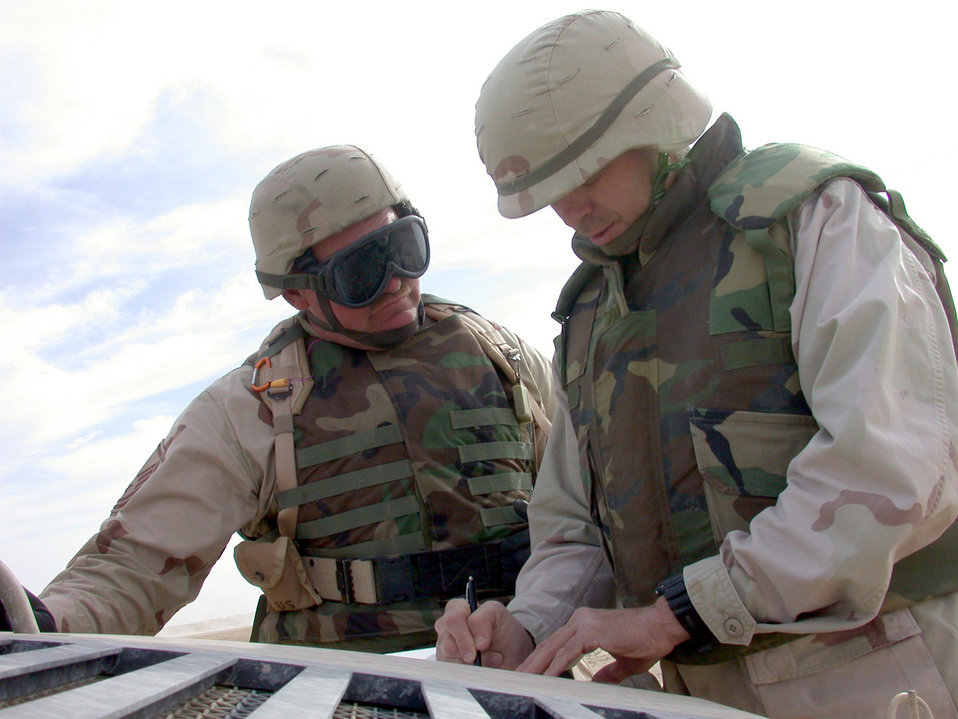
Airmen learn convoy skills

SOUTHWEST ASIA -- Master Sgt. David Voltz (left) speaks with John Fracassini, an instructor with Military Professional Resources Inc., after a convoy live-fire exercise. The exercise was designed to teach transportation Airman how to fire on hostile forces, while continuing to travel through the